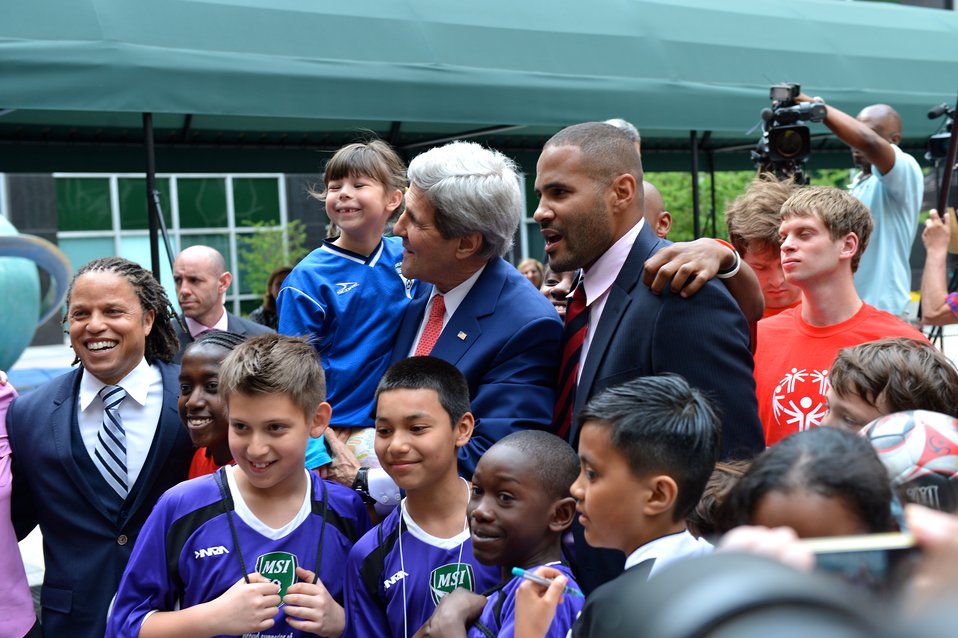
Secretary Kerry With Young Athletes and Sports Envoys Scurry, Jones and Sanneh

U.S. Secretary of State John Kerry poses for a photo with athletes from local youth soccer organizations and Sports Envoys Briana Scurry, Cobi Jones, and Tony Sanneh at the U.S. Department of State in Washington, D.C., on April 14, 2014.